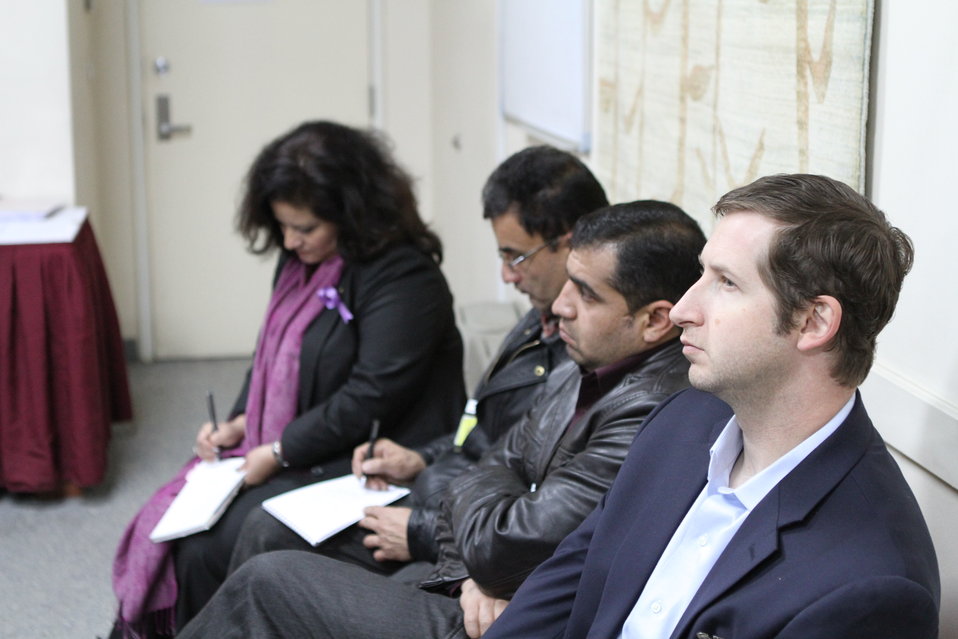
Presentation of the ACTA Civil Society analysis of the FY 1392 Afghan national budget